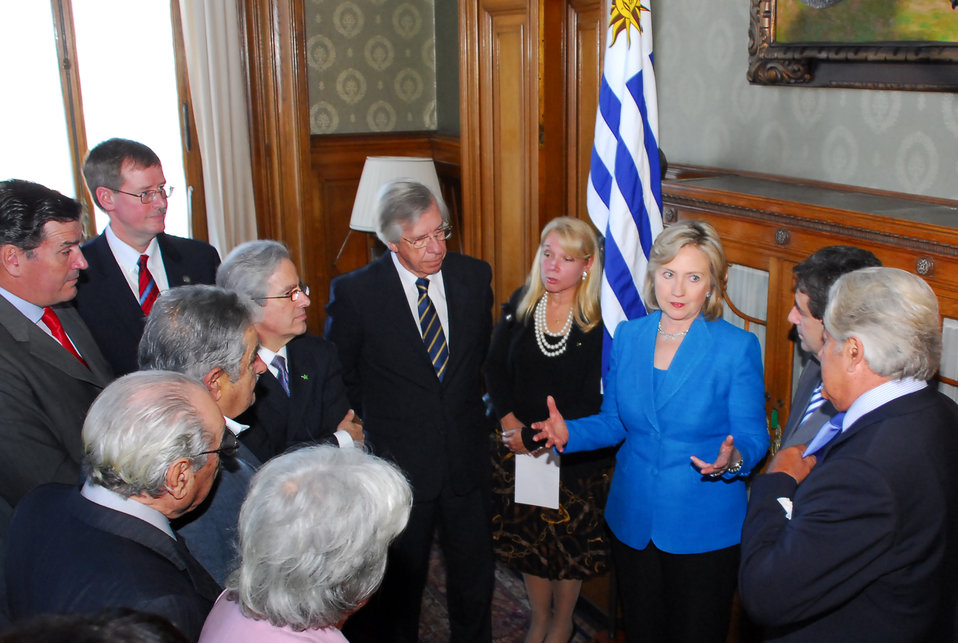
Secretary Clinton Meets With Uruguay President-elect

U.S. Secretary of State Hillary Rodham Clinton meets with Uruguay President-elect Jose Mujica and opposition leaders, Montevideo, Uruguay March 1, 2010.